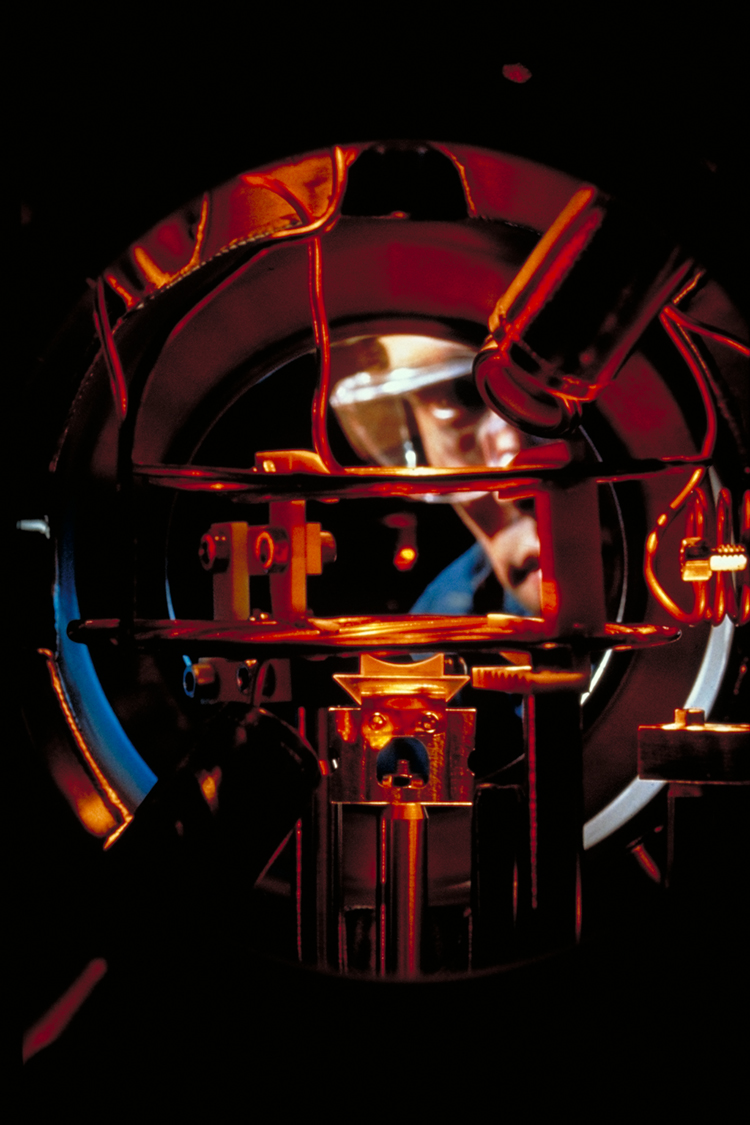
Atom Trap